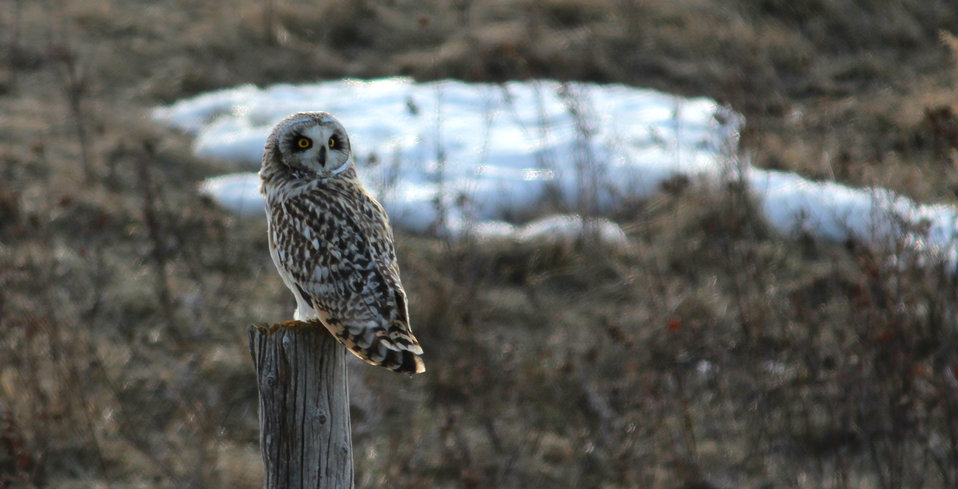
Short-eared Owl

This partially diurnal owl can be seen hunting over open fields, meadows, and marshes. This one is perched on a lookout post in McIntosh County, North Dakota. Surprisingly, this owl nests on the ground in grasslands. Unfortunately, its numbers are in decline due to loss of habitat and grassland conversion.